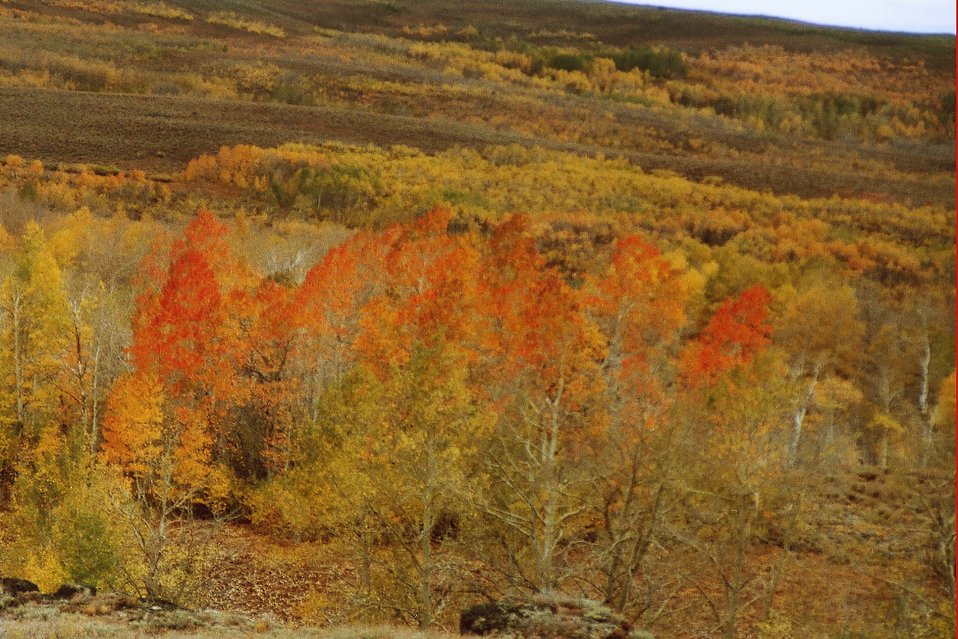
Aspens at Jackman Park, Steen's Mountain.